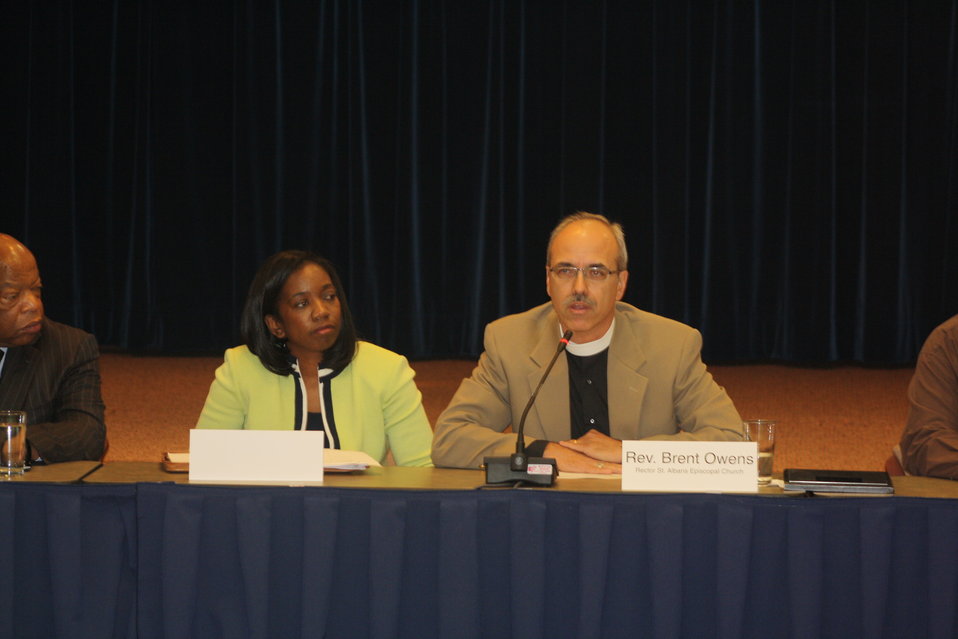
Faith-Based and Neighborhood Partnership launch at Atlanta's Carter Center